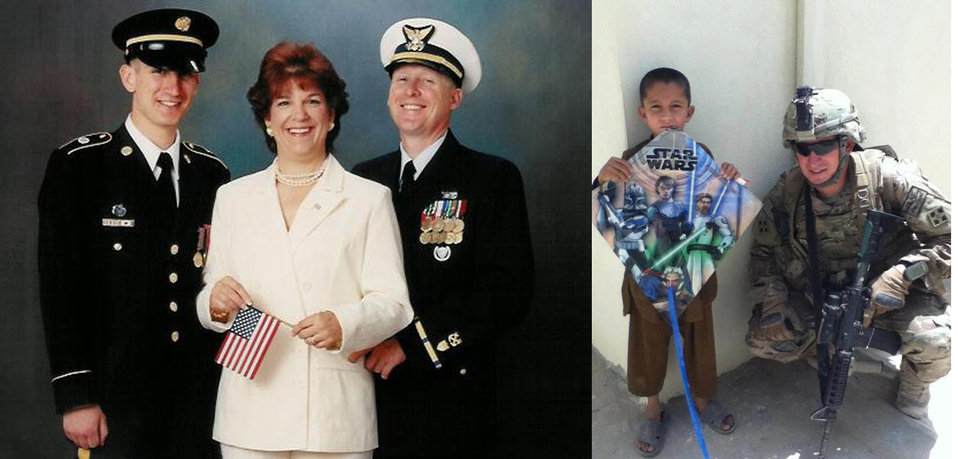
Daniel Brown.
Retired Chief Warrant Officer Four Daniel Brown (30 years of service), is an evidence custodian at the Port of Louisville, KY, (Office of Law Enforcement). His wife Lisa also served in the Coast Guard as a Quartermaster Third Class. Their son, Sergeant Dana Brown, is currently serving with the U.S. Army (International Security Assistance Force (ISAF) with the 4th Infantry Division, as a Cavalry Scout in Afghanistan.